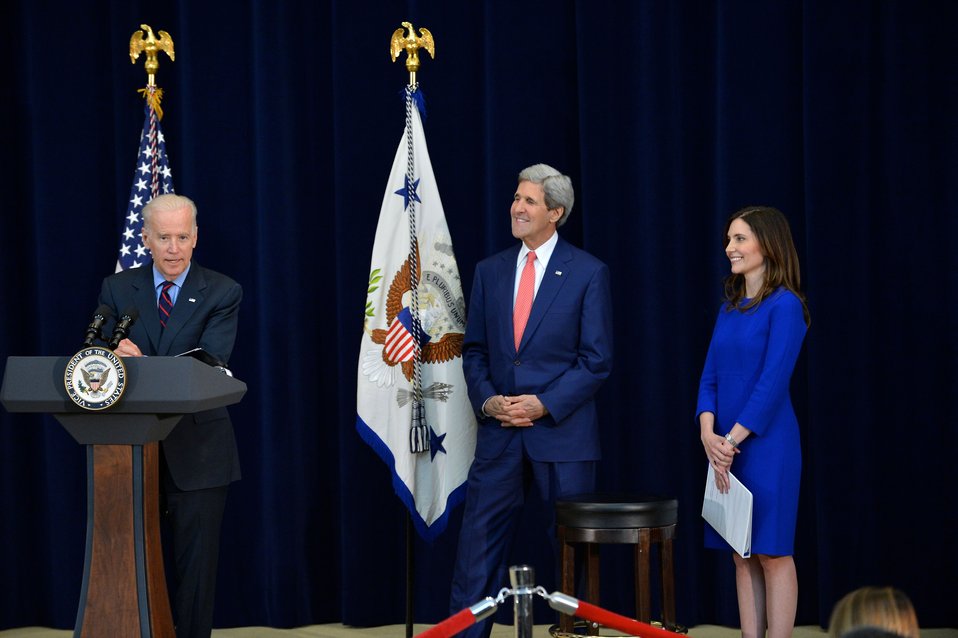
Vice President Biden Delivers Remarks at Trophy Tour Event

With U.S. Secretary of State John Kerry and Assistant Secretary of State for Educational and Cultural Affairs Evan Ryan looking on, Vice President Joe Biden delivers remarks before unveiling the FIFA World Cup trophy during the FIFA World Cup Trophy Tour by Coca-Cola preceding the FIFA World Cup tournament in Brazil, which begins on June 12, 2014, at the U.S. Department of State in Washington, D.C., on April 14, 2014.